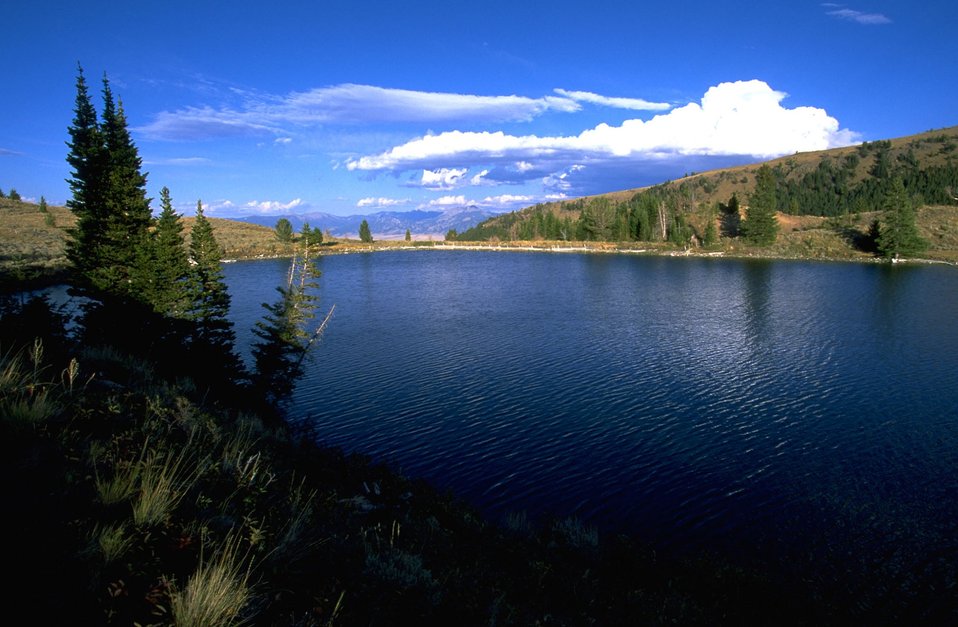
Axolotl Lake with the Spanish Peaks in the background